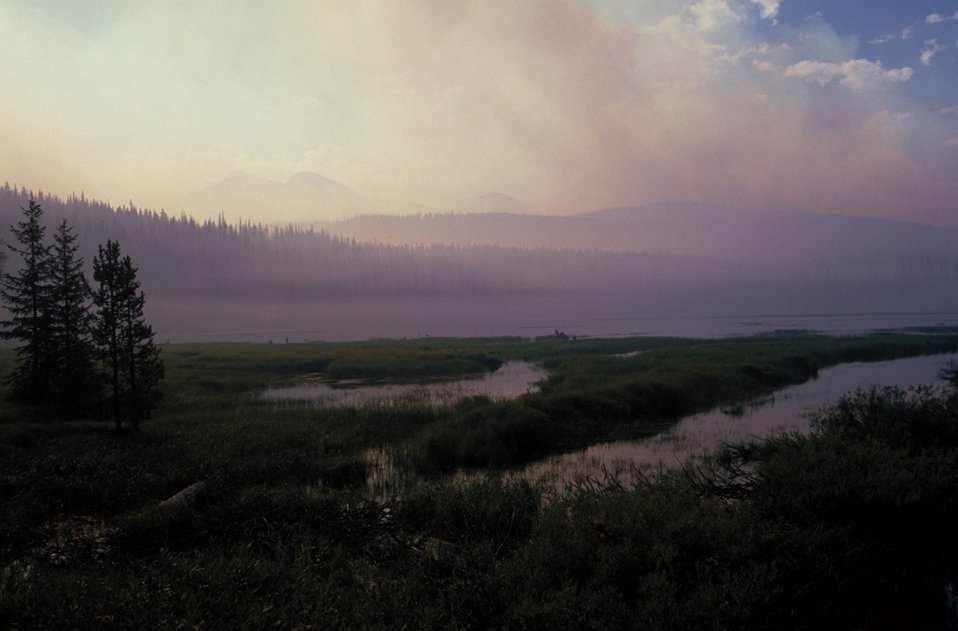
Helicopter fill up area Fire Season 2000 Lower Snake River District LSRD